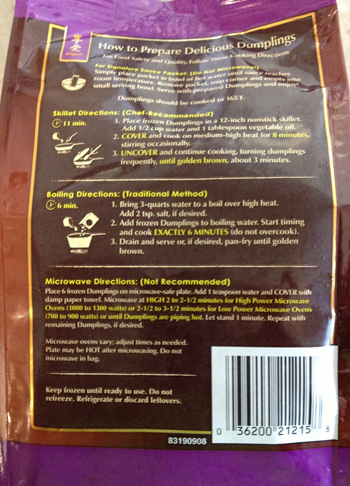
RECALLED – P.F. Chang's

September 18, 2013 – Product Recall – Specific Lots of P.F. Chang's Home Menu Pork and Leek Dumpling Frozen Appetizers Recalled Due to Undeclared Allergen
.